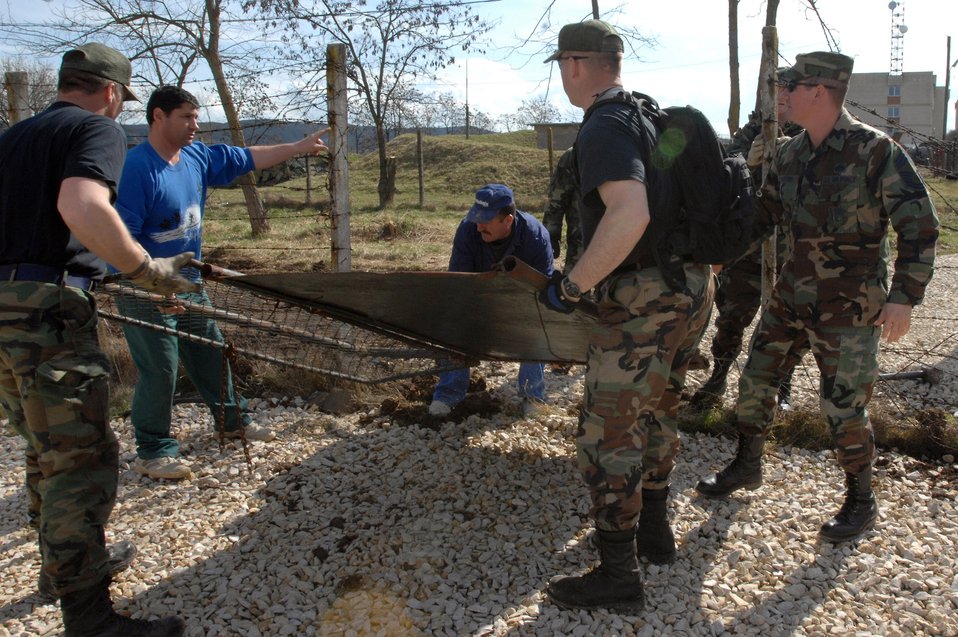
Civil engineers build Airmen in Romania a home

Members of the 404th Expeditionary Air Base Squadron work with Romanian nationals March 24 to remove a gate that divided the Romania base from the tent city at Campia Turzii, Romania. The deployed civil engineering team built an entire tent city in 96 hours to support U.S. operations at the air base. The Airmen are part of a team which is augmenting NATO forces in securing the airspace around Bucharest, Romania, for the NATO Summit April 2 to 4.